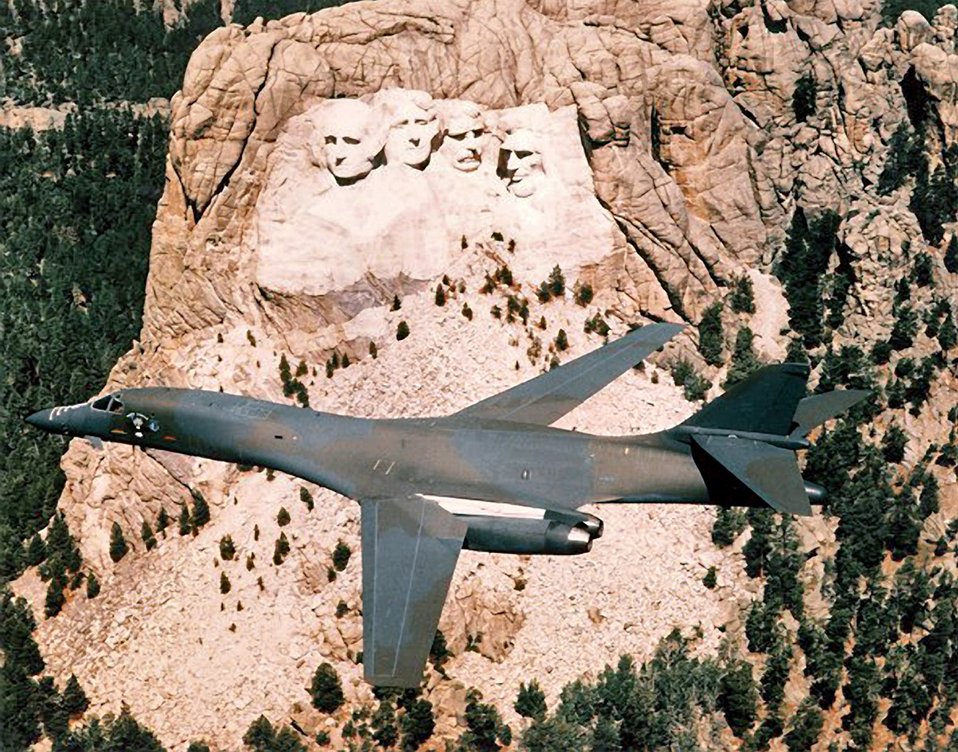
Celebrating President's Day

A B-1B Lancer flies past the Mount Rushmore National Memorial near Keystone, S.D. The monument features presidents Washington, Jefferson, Roosevelt and Lincoln. President's Day is a federal holiday in the U.S. and is celebrated on the third Monday of February.